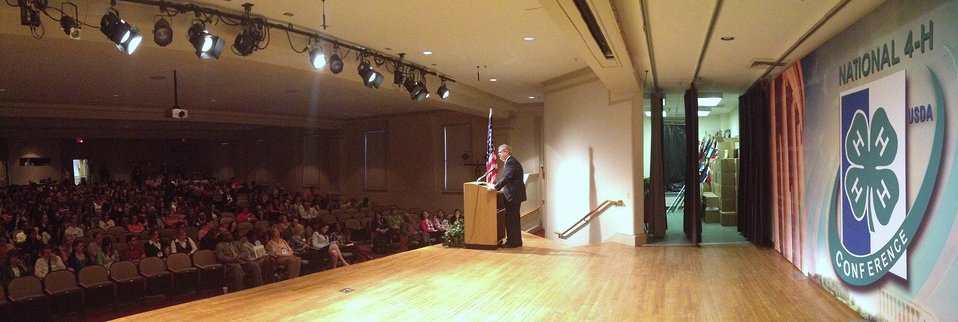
U.S. Department of Agriculture (USDA) Secretary Tom Vilsack delivers the keynote remarks to more than 1,000 youth leaders from states and territories across the country attending the 2013 National 4-H Conference, on Monday, April 8, 2013 in Chevy Chase, MD. Also speaking at the event is Agriculture Departmental Management Office of Advocacy and Outreach Director Carolyn Parker (front row, second from left) and National Institute of Food and Agriculture Director Dr. Sonny Ramaswamy (front row, right section, left end).